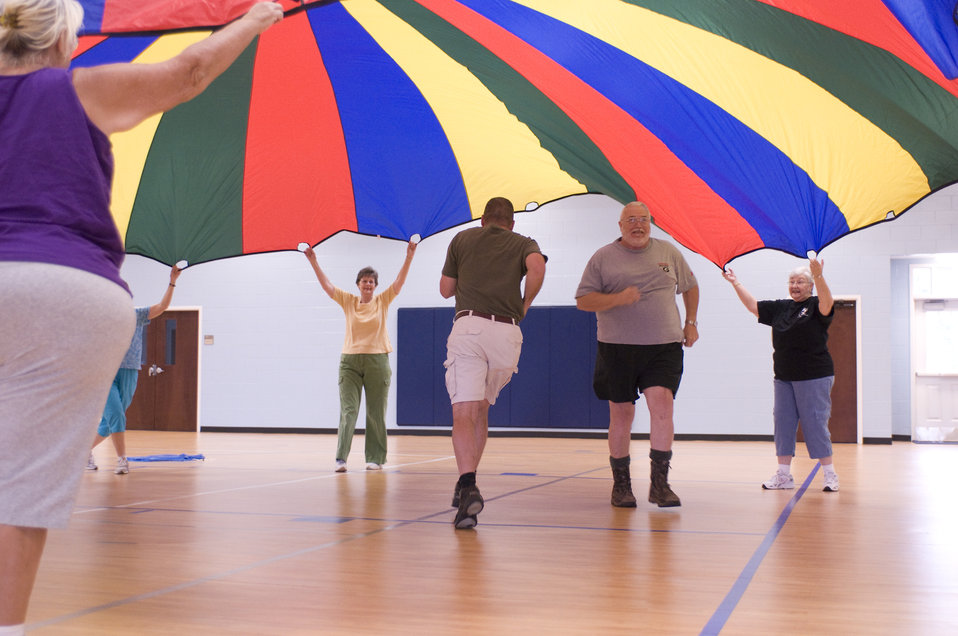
The older individuals pictured here on the wooden floor of an indoor basketball court, were participating in an exercise class consisting of stretching, and aerobic repetitive motion movements. The group members were working the muscles of their shoulders and arms by raising their outstretched arms over their heads then back down again, repeating this motion, while they held on to a large multicolored tarpaulin, which had been equipped with handles along its rim. In this particular view, two of the male participants had released their hold on the tarp, and were switching positions, each running as quickly as possible to the other's spot before the tarp came back down to its low-point.